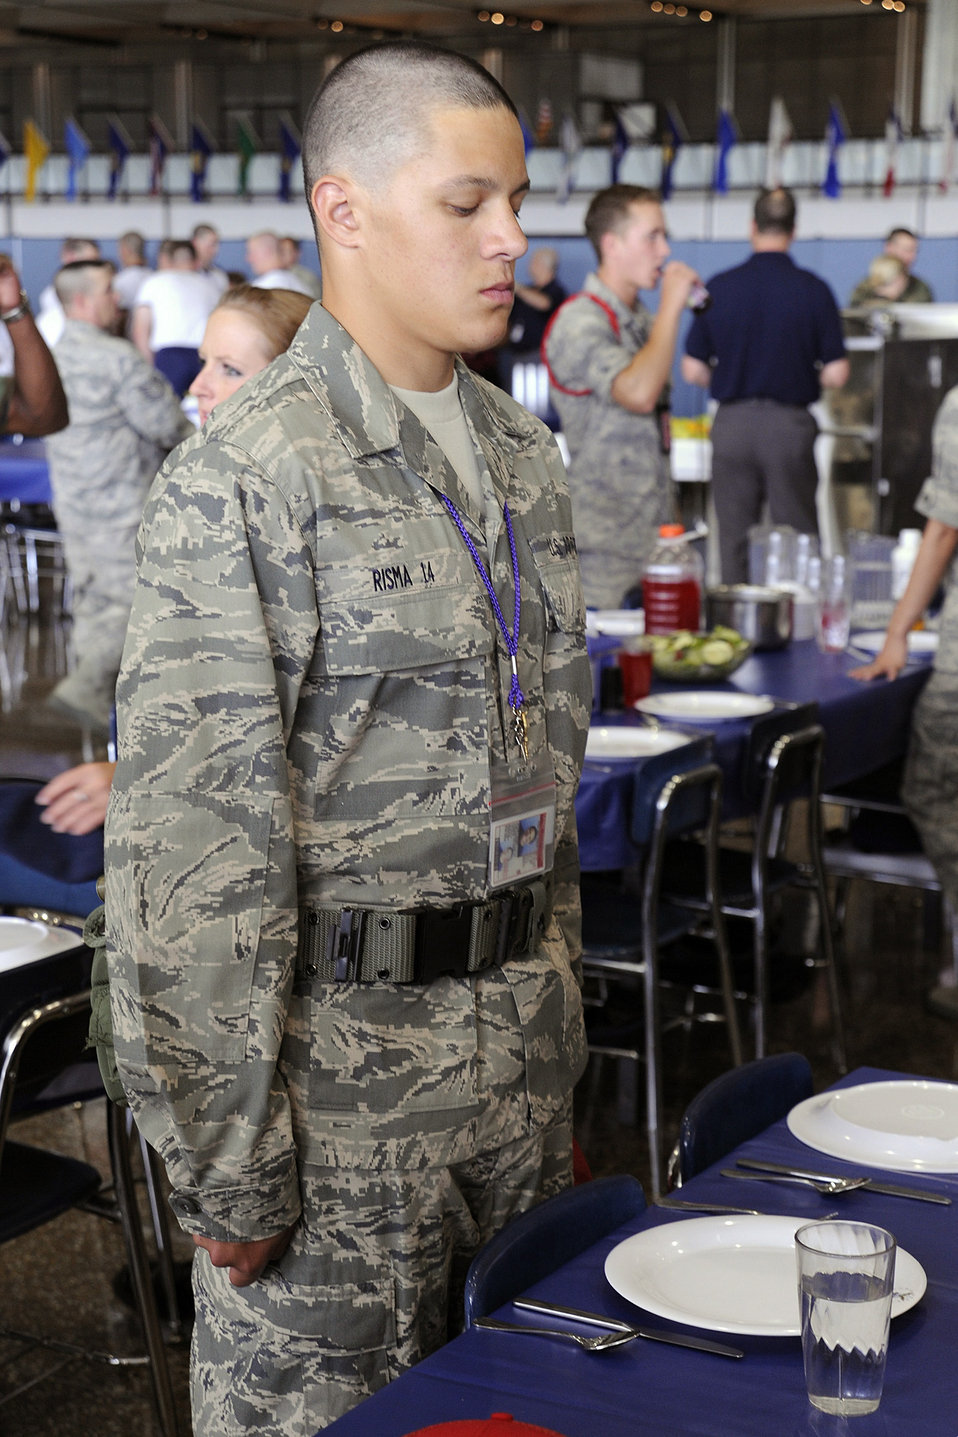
New Academy cadets learn dining 'traditions'

Basic cadet Jacob Risma stands at attention while keeping his eyes firmly fixed on the Air Force Academy Seal that adorns every plate at Mitchell Hall during the first day of basic cadet training at the U.S. Air Force Academy, Colo., June 25, 2010.